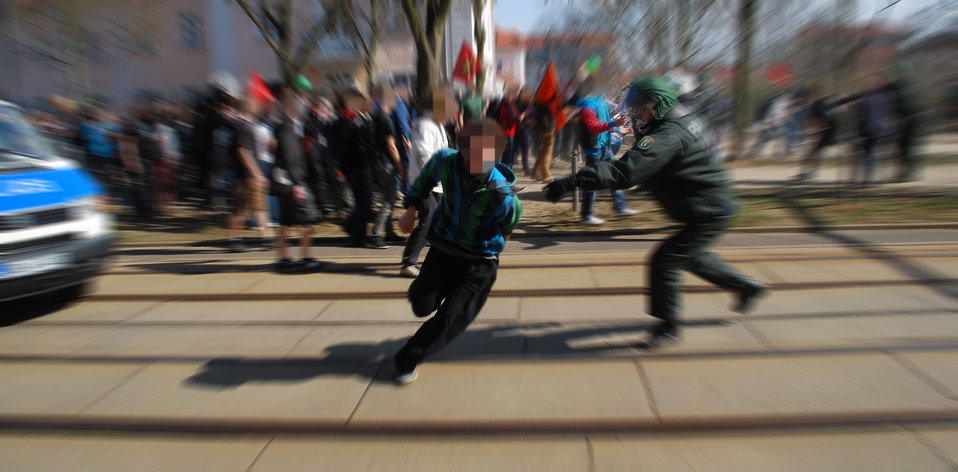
Proteste gegen den Nazi-Aufmarsch am 24.3.2012 in Frankfurt (Oder)